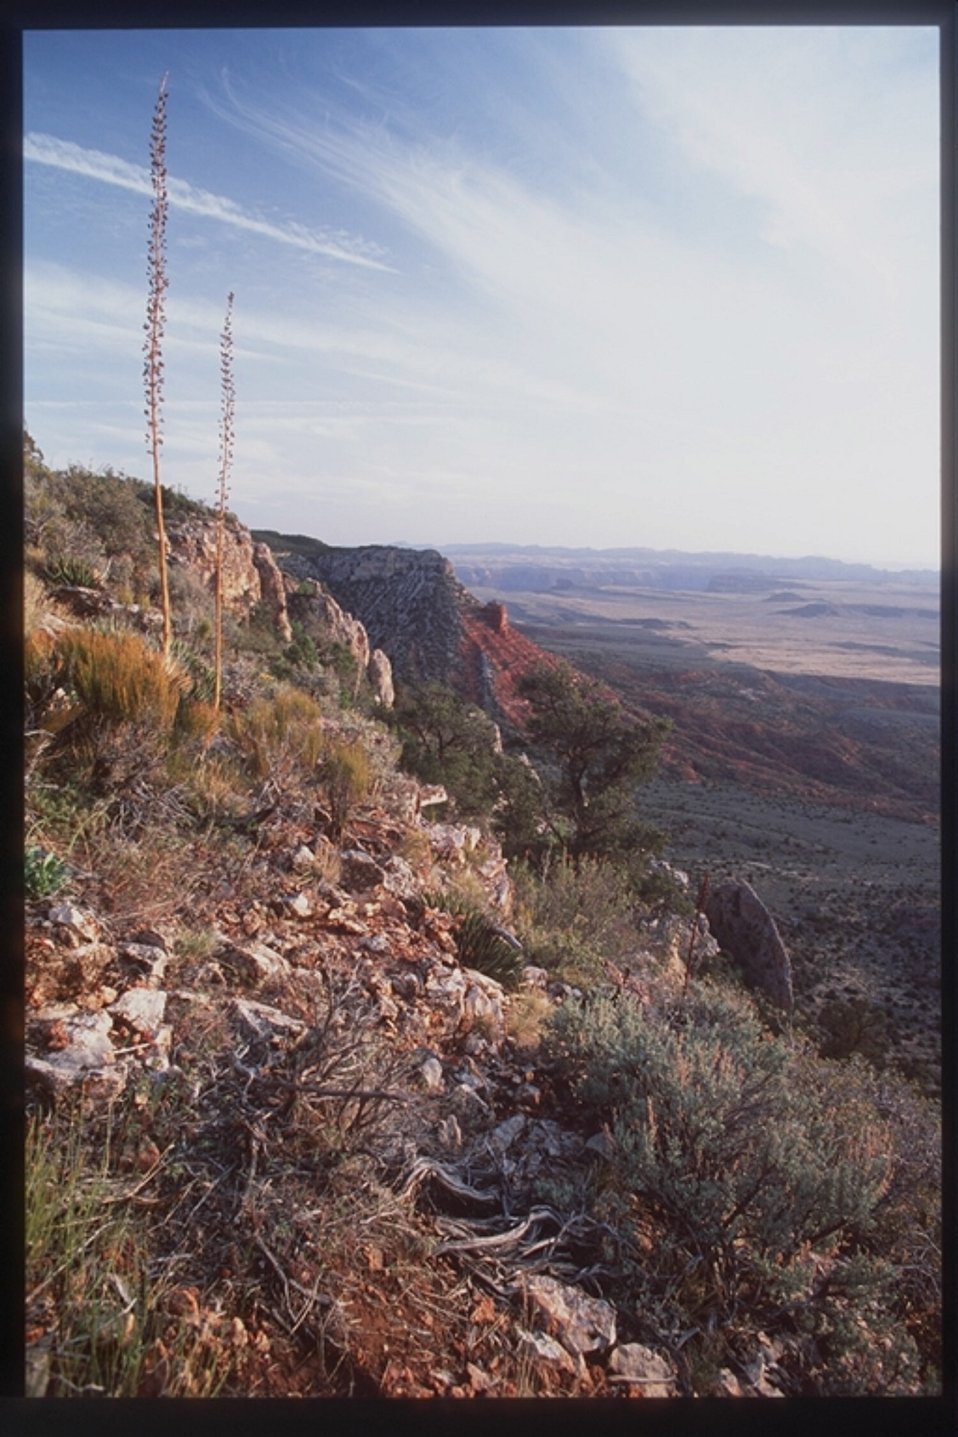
The Grand Canyon-Parashant National Monument is one of Arizona's most beautiful areas.